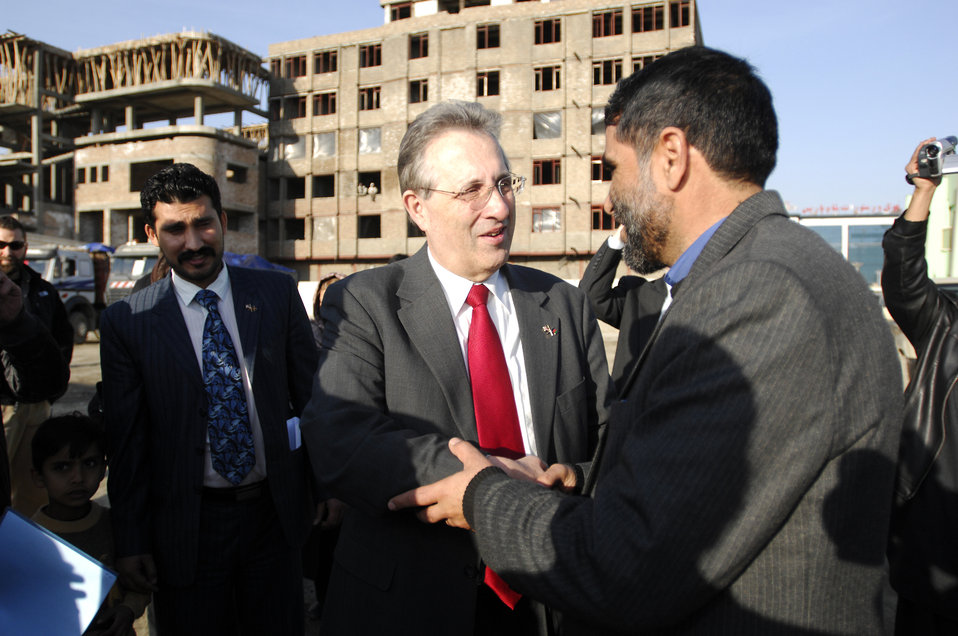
Care44